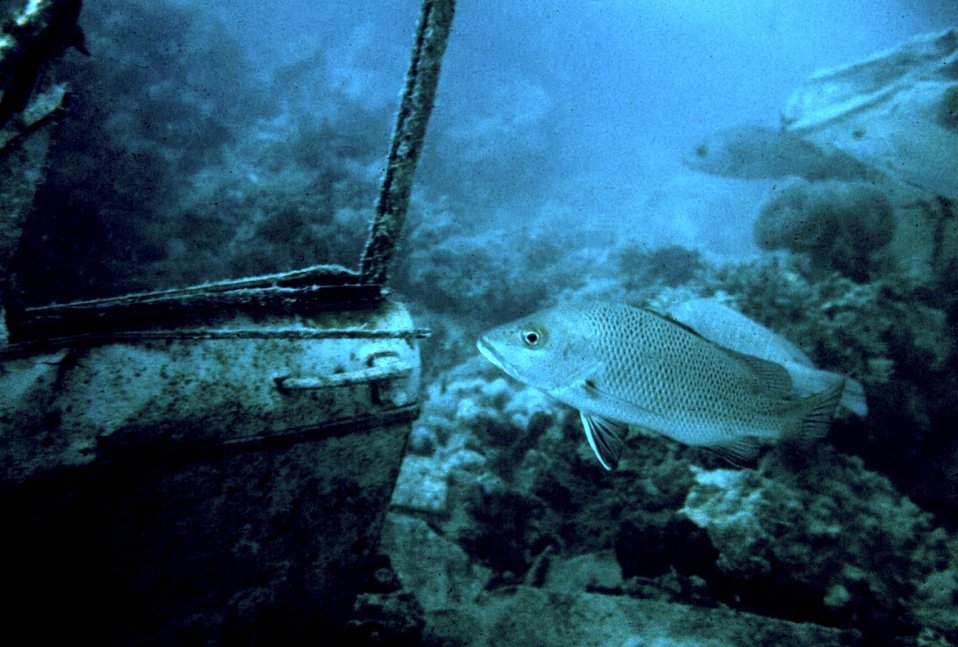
Lutjanus sp. Grey snapper